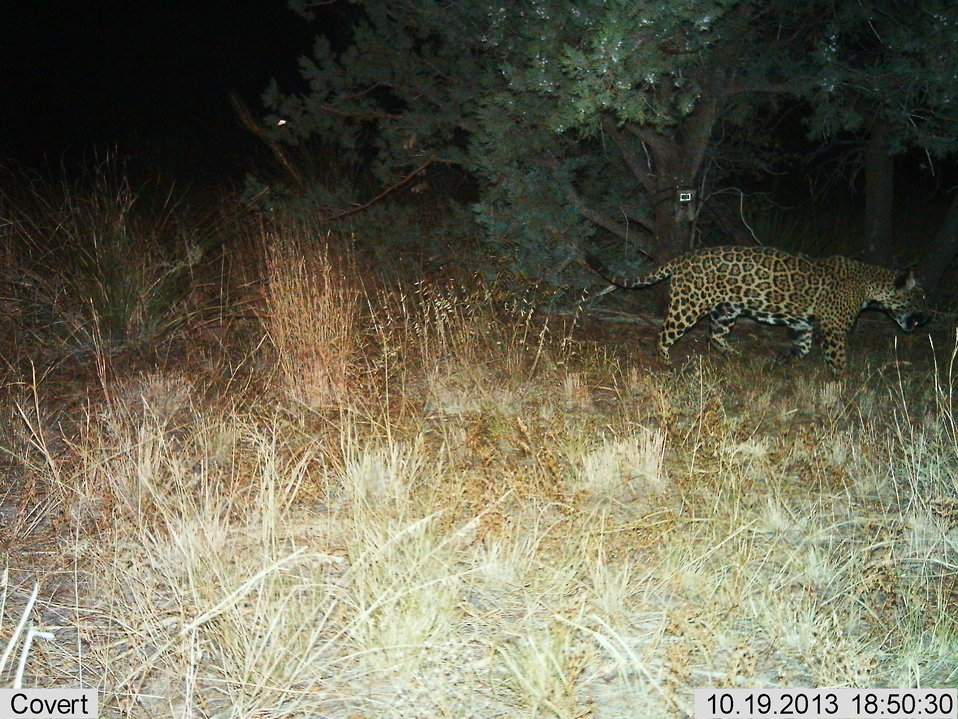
Male jaguar photographed by automatic wildlife cameras in the Santa Rita Mountains on October 19, 2013, as part of a U.S. Fish and Wildlife Service/Department of Homeland Security-funded jaguar survey conducted by University of Arizona. This is the third of three photos from October 19. The jaguar has been photographed previously at this location.